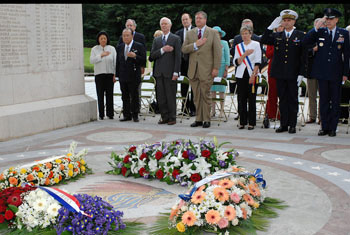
Secretary of the Air Force visit honors memorial and supports Paris Air Show

A Congressional Delegation of six senators, Secretary of the Air Force Michael Donley, French dignitaries and Maj. Gen. William A. Chambers, U.S. Air Forces in Europe vice commander, place their hands over their hearts and salute in tribute during the wreath laying ceremony at the Memorial de l'Escadrille La Fayette just outside of Paris June 13. The wreath ceremony pays honor to the American volunteer combat flying aces known as the